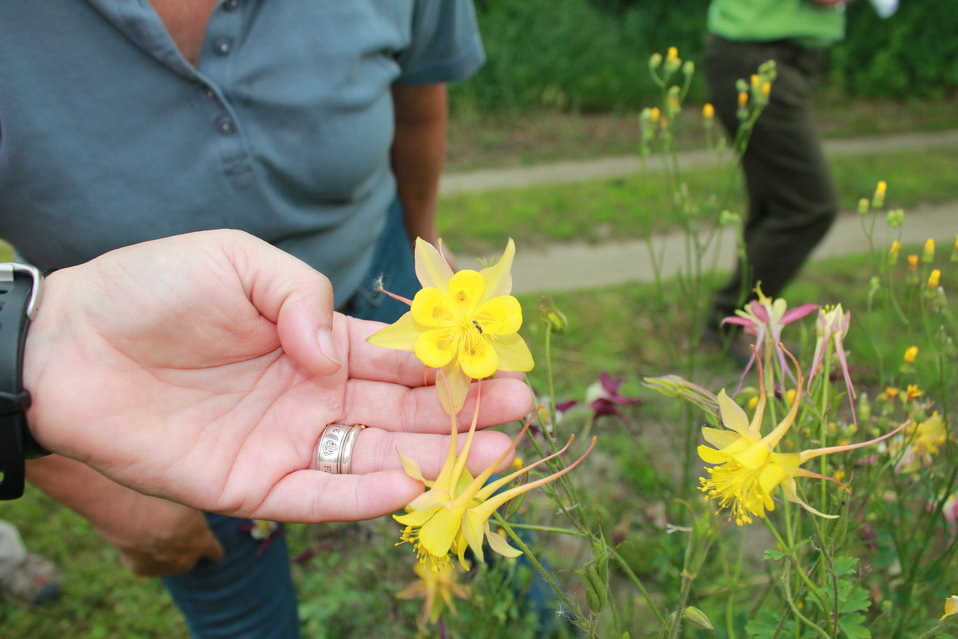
Pollinator in Hadley, Massachusetts

Photo by: Megan Nagel
USFWS